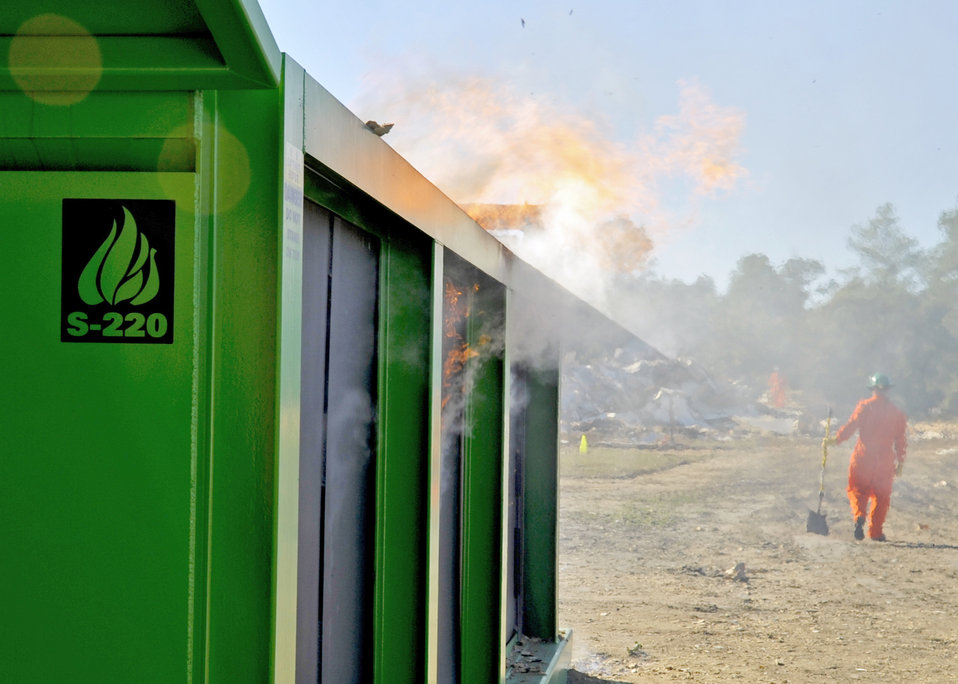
Air burners at Eglin

Fire spills over the side of the 46th Test Wing's new air curtain incinerator on a gusty day Oct. 31, 2010 at Eglin Air Force Base, Fla.